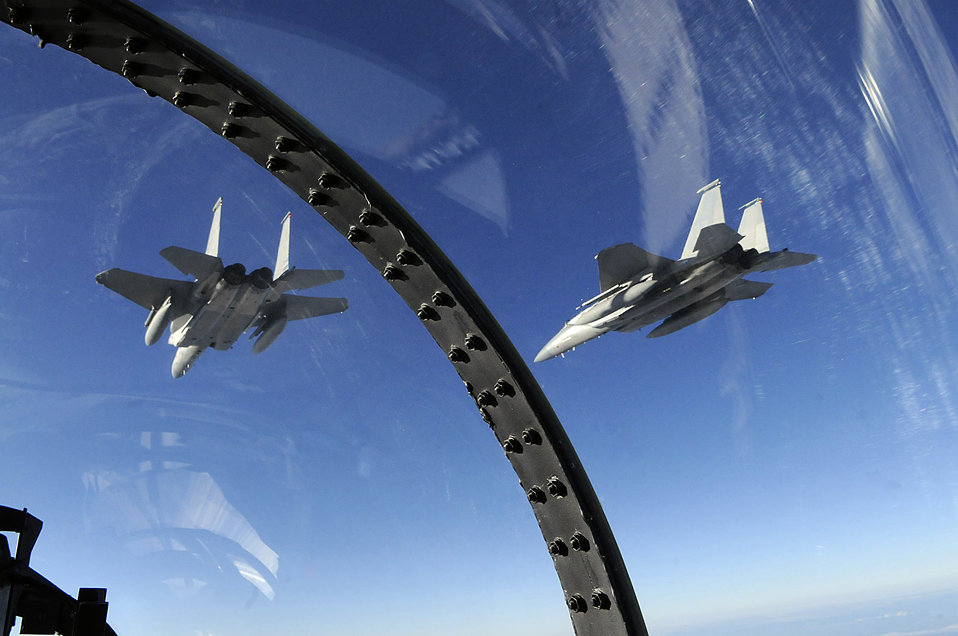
Kadena ATR

Three F-15 Eagles from the 44th Fighter Squadron train with Japan Air Self Defense Forces Nov. 17, 2010, off the coast of Hokkaido, Japan. Twelve jets and nearly 200 Airmen from Kadena Air Base, Japan, partcipated in an Aviation Training Relocation.